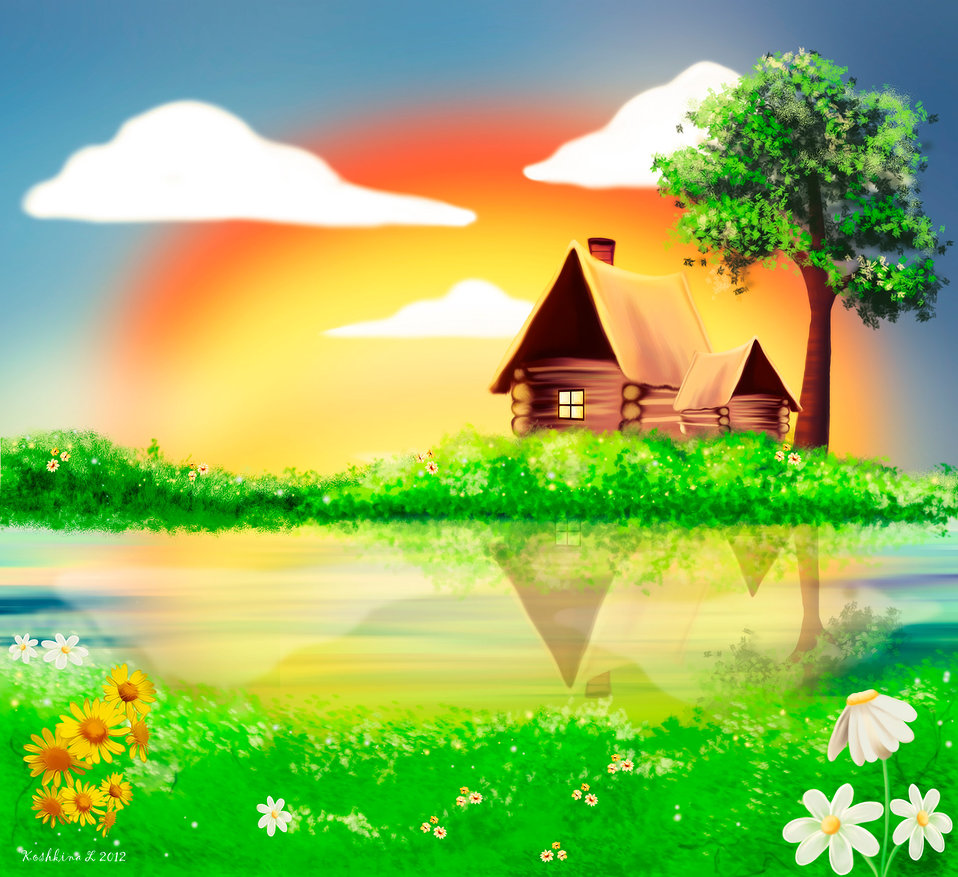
Fabulous house

Children's illustration with a house on the river bank.